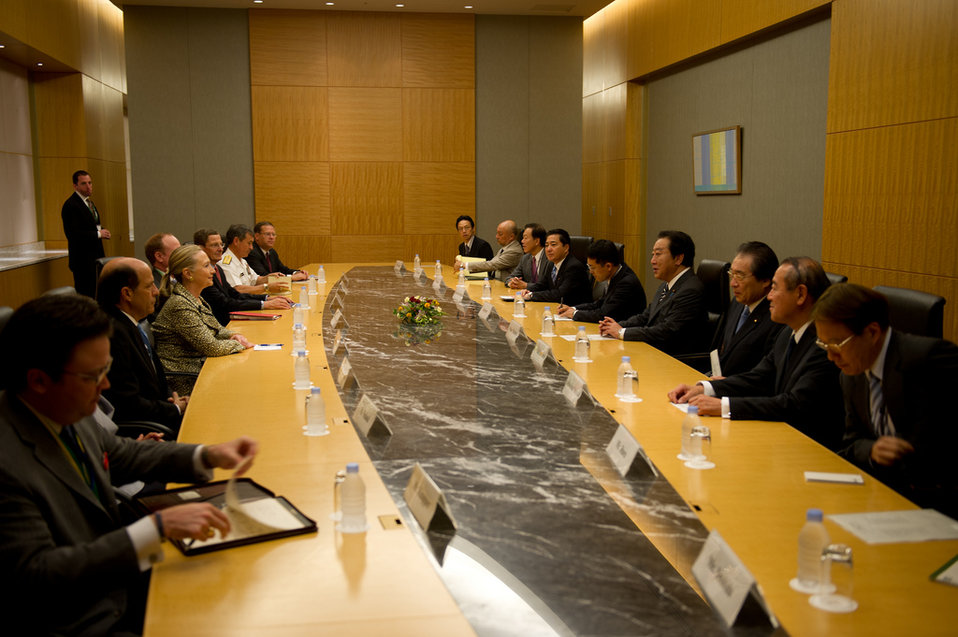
Secretary Clinton's Bilateral Meeting With Japan

U.S. Secretary of State Hillary Rodham Clinton in a bilateral meeting with Japan on the sidelines of the Tokyo Conference on Afghanistan in Tokyo, Japan, on July 8, 2012.